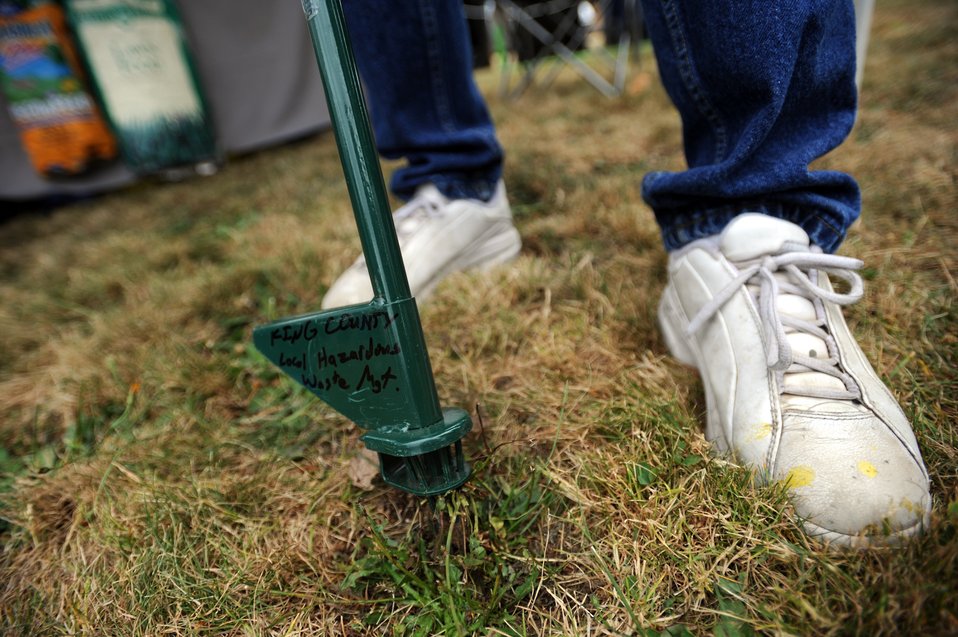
Natural Yard Care

A King County employee demonstrates how to practice natural yard care at the 5th Annual Duwamish River Festival. Reducing pesticides is important to help control ongoing contamination in the river from stormwater runoff. Visit www.epa.gov/region10/duwamish to learn more about EPA's efforts to clean up and restore the lower Duwamish River.